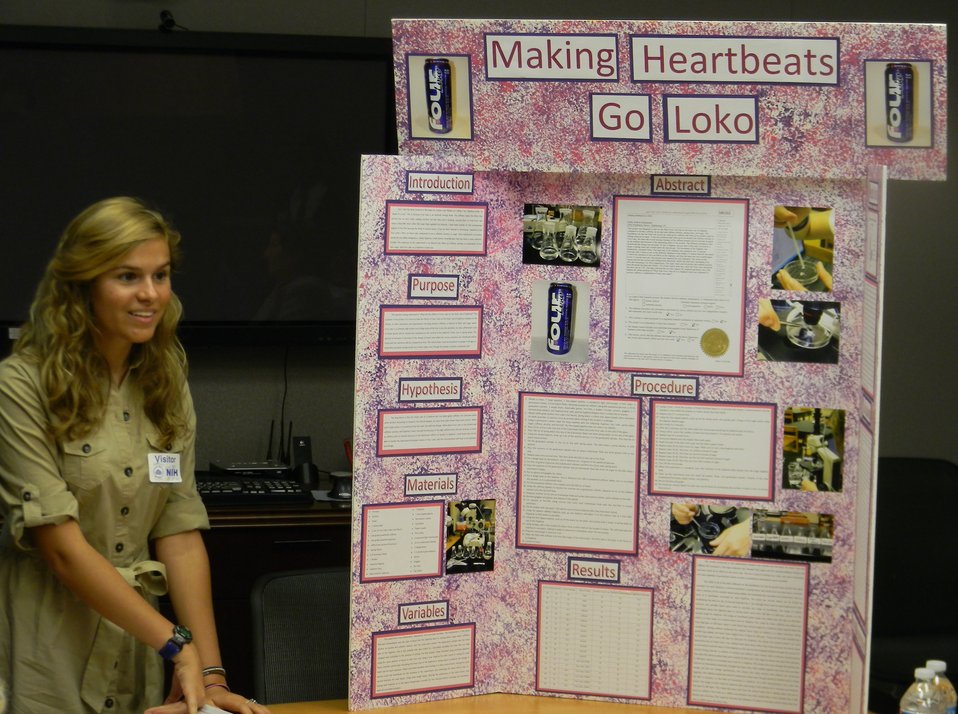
Schumacher presents3

Darby Kathryn Schumacher, 2nd place winner of the 2011 Addiction Science Awards, presents her study to NIDA scientists